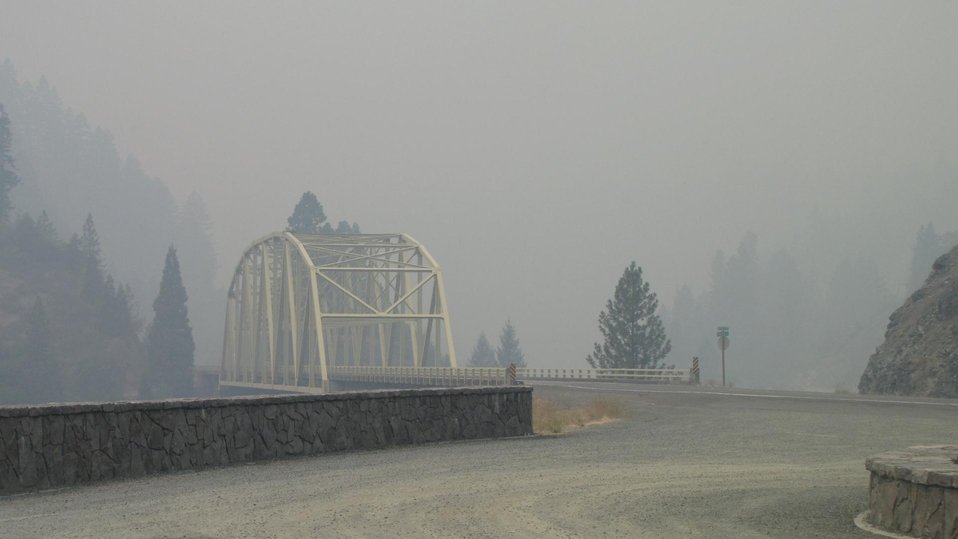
Smoke from the Big Windy Complex Fires reduces visibility over the Hellgate Bridge that spans the Rogue River near Grants Pass, OR. The Big Windy Complex Fires consists of three fires: The Big Windy Fire, Calvert Peak Fire, and Jenny Fire (formerly the Windy 16 Fire) near Grants Pass, OR. The fires began on Jul. 26, 2013 by lighting have consumed approximately 7, 499 acres.